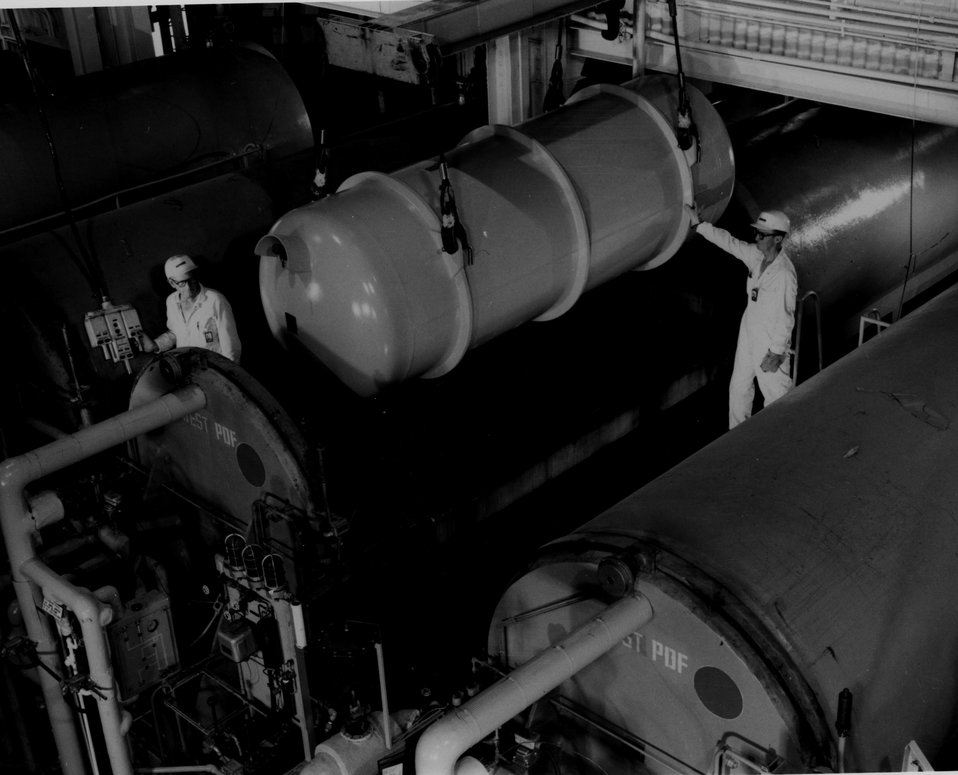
A cylinder of uranium hexaflouride is lowered into a giant enclave at the Energy Research and Development Administration's Gaseous Diffusion Plant at Oak Ridge, Tennessee. c. 1971